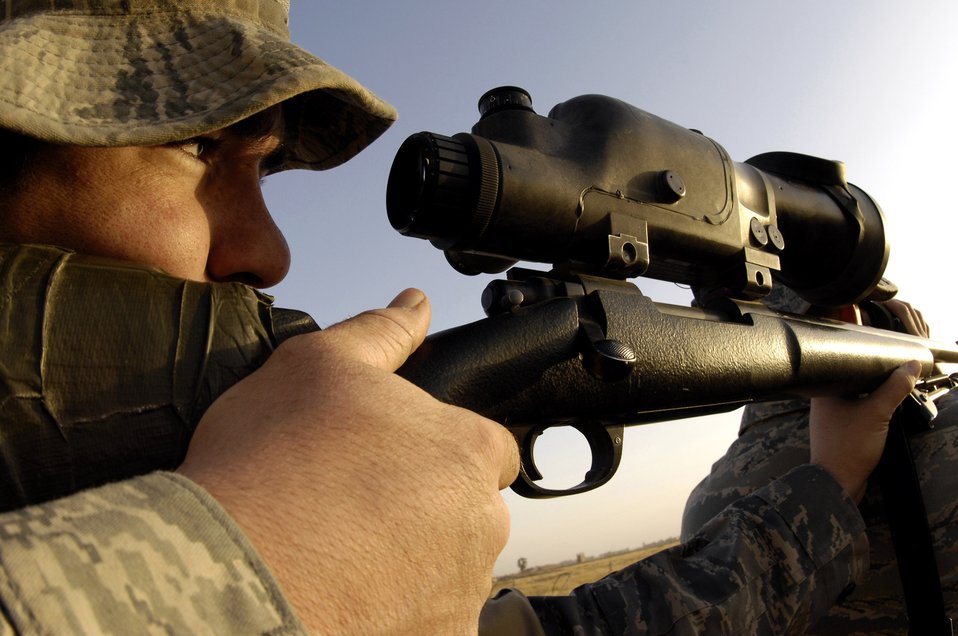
Air Force sharpshooters provide extra eyes outside the wire

Airman 1st Class Matt Leeper slowly squeezes the trigger of his M-24 sniper rifle, the military version of a Remington 700 Nov. 14 near Kirkuk Regional Air Base, Iraq. Airman Leeper is a memeber of the 506th Expeditionary Security Forces Squadron Close Precision Engagement team. The CPET train as anti-sniper teams to target terrorist and insurgent snipers attacking U.S. and coalition forces in the area. Airman Leeper is deployed from the 354th Security Forces Squadron at Eielson Air Force Base, Alaska.